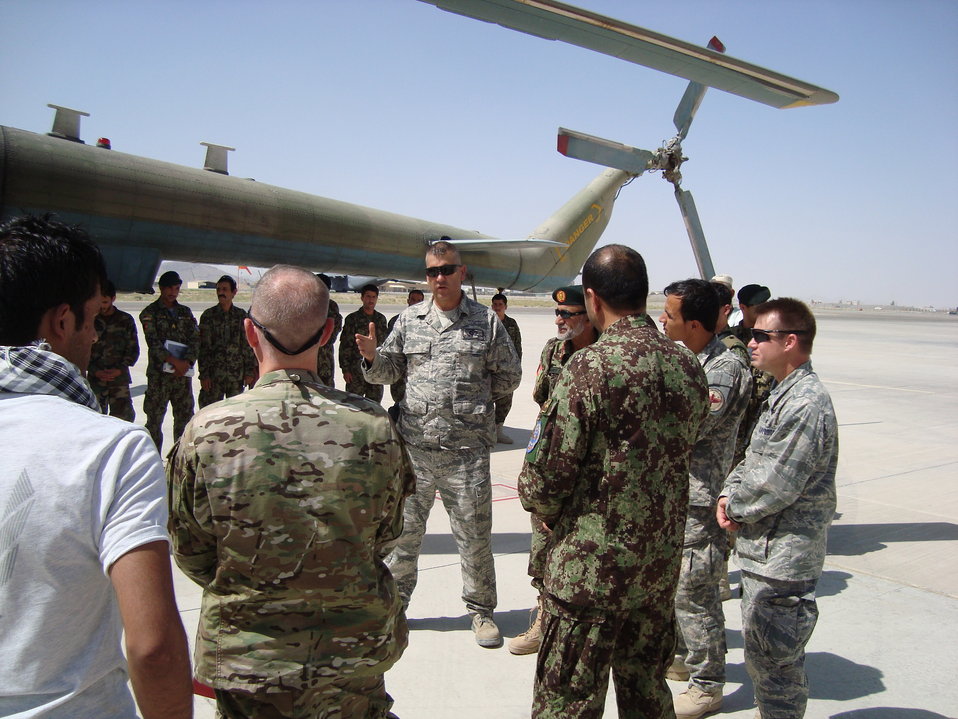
Arming point key to Afghan airpower dominance

Maj. Jeffrey Hunziker makes opening remarks May 15, 2011, during a ceremony that officially opened an Afghan Mi-17 arming point at Kandahar Airfield, Afghanistan. Major Hunziker is the 442nd Air Expeditionary Advisory Squadron commander.